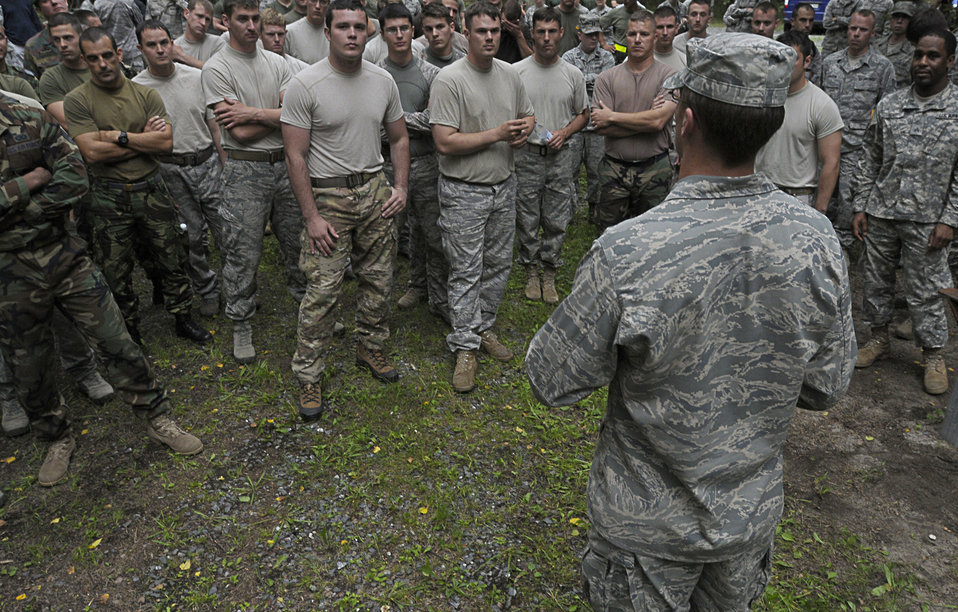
Allied Strike 2011

First Lt. Christopher Dunn briefs U.S. and NATO Allied Strike participants June 23, 2011, before they begin an obstacle-course competition at Grafenwoehr Training Area, Germany. Lieutenant Dunn is the safety officer in charge of the 4th Air Support Operations Group.